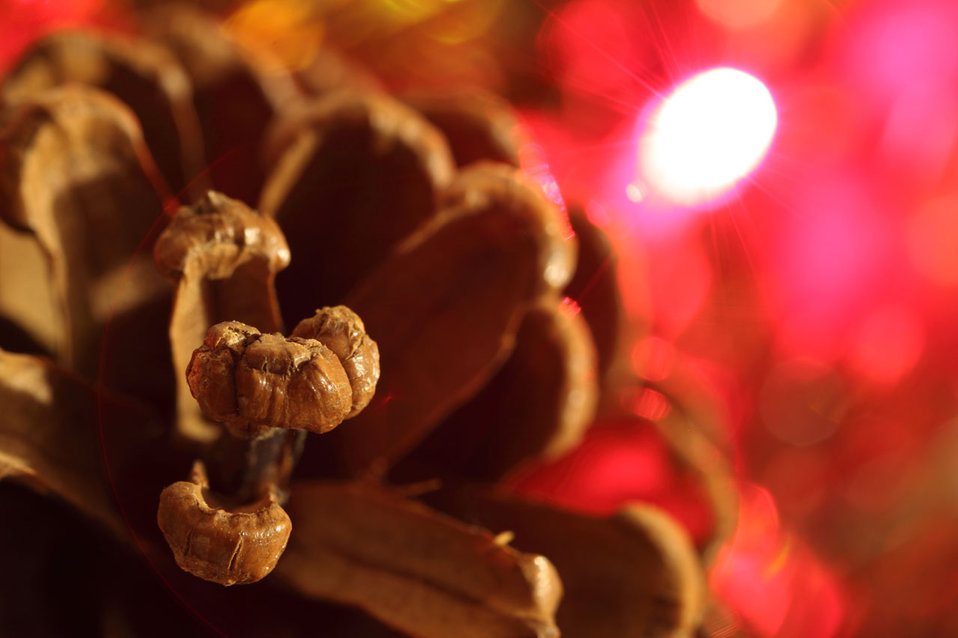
Pine cone and red light

Macro photo of pine cone and red light.